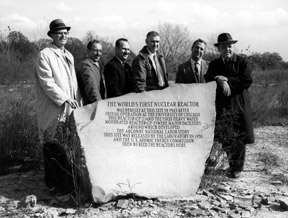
Six members of the team which achieved mankind's first sustained controlled, nuclear chain reaction at the University of Chicago in 1942 pose at another historic site.